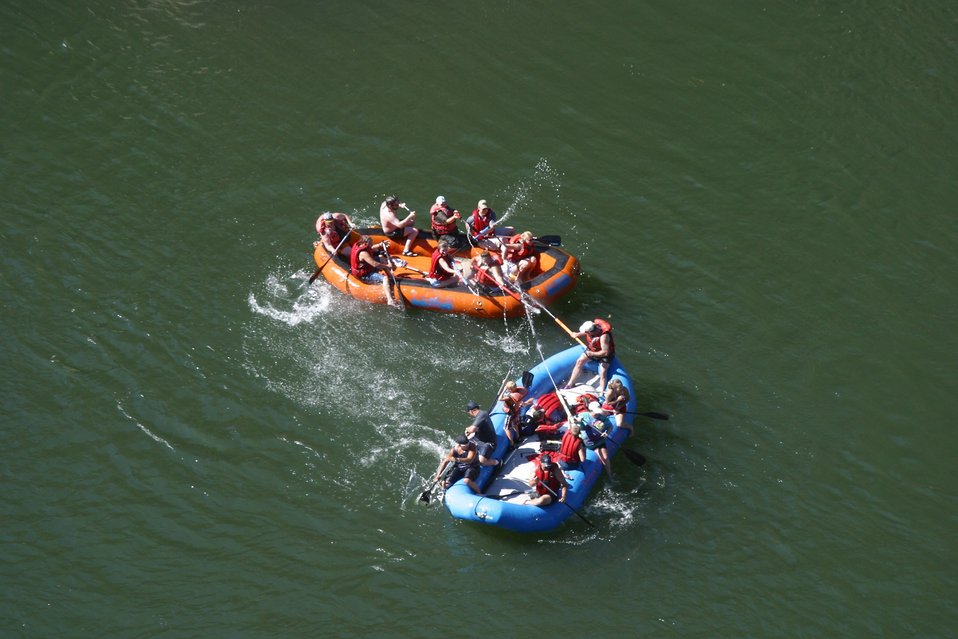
Boaters below Hellgate Canyon